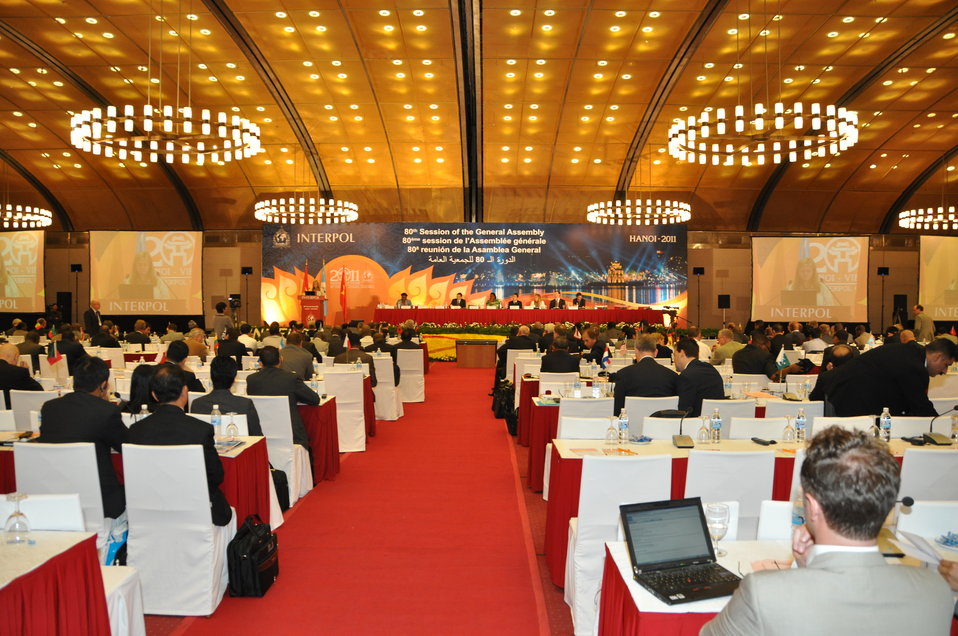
INTERPOL General Assembly in Hanoi, November 2011

Project Predator, an initiative to protect and save the world's last surviving wild tigers, was unveiled today at the 80th INTERPOL General Assembly, a gathering of global law enforcement support from the organization's 190 member countries.

Created by INTERPOL, Project Predator unites the efforts of police, customs and wildlife officials in the 13 countries in Asia where wild tigers can still be found. This new partnership under the Global Tiger Initiative brings together officials from the 13 tiger range countries, the U.S. Agency for International Development (USAID), the UK's Department for Environment, Food and Rural Affairs (Defra), the World Bank, the Smithsonian Institution and INTERPOL.